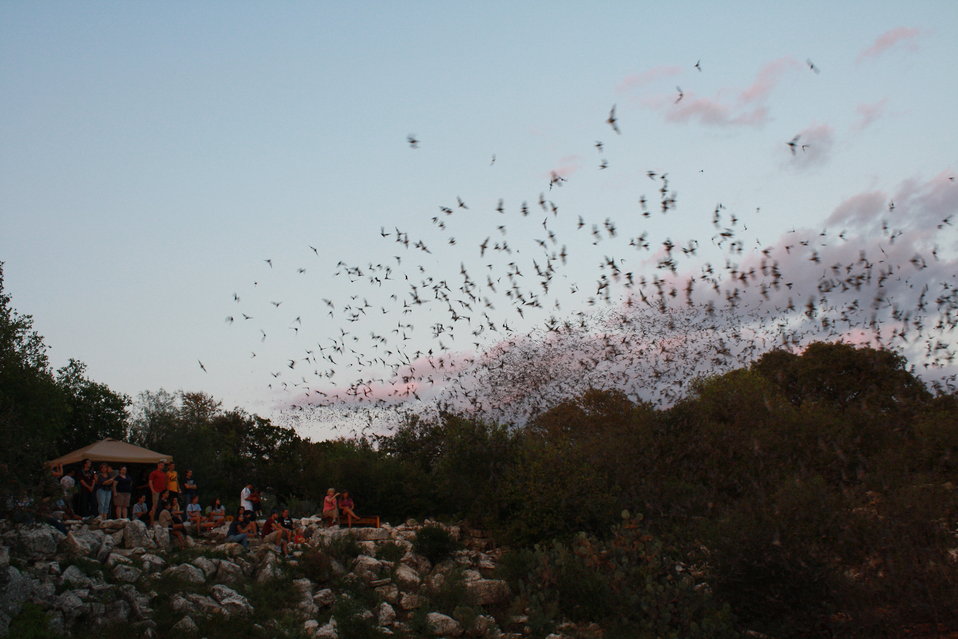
Onlookers watch as Mexican free-tailed bats exiting Bracken Bat Cave